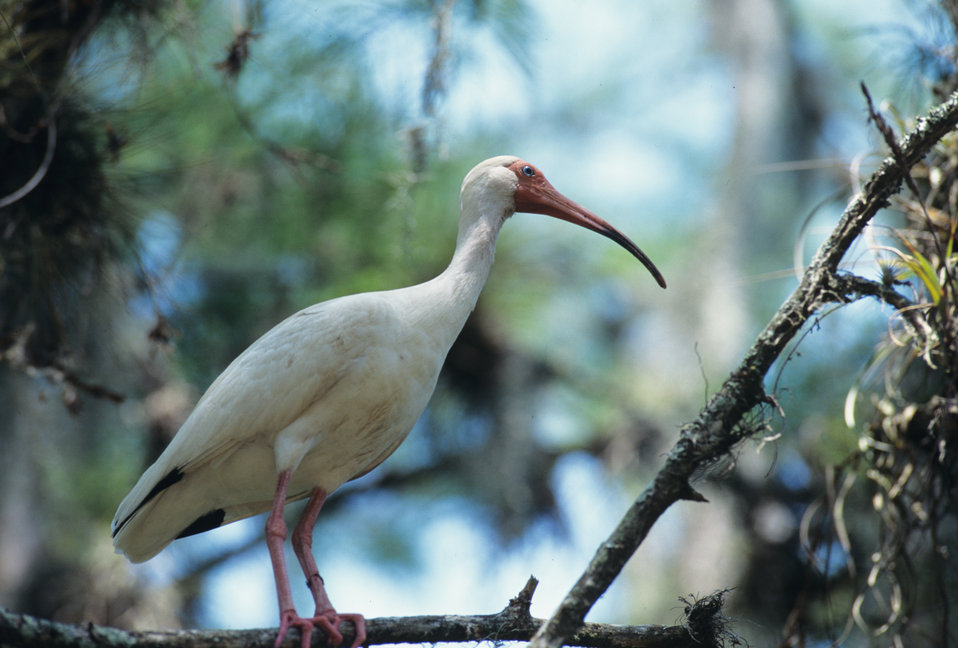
An American White Ibis sits on a tree branch in Florida on May 10, 1995. The American White Ibis (Eudocimus albus) is a species of bird found from the mid-Atlantic and Gulf Coast of the United States and to the coasts of Mexico and Central America. The ibis is a medium-sized bird with an overall white plumage, bright red-orange down-curved bill and long legs, and black wing tips that are usually only visible in flight. Males are larger and have longer bills than females.